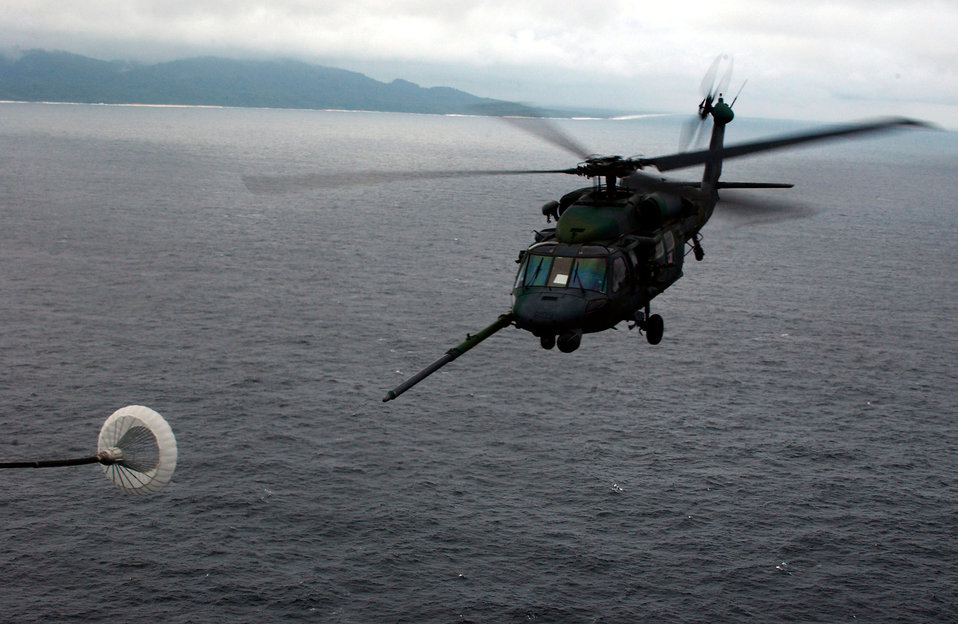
Fueling over the sea

OVER THE ATLANTIC OCEAN - An HH-60G Pave Hawk helicopter prepares for aerial refueling from an MC-130P Combat Shadow after a mission into the U.S. Embassy in Liberia Aug. 6.